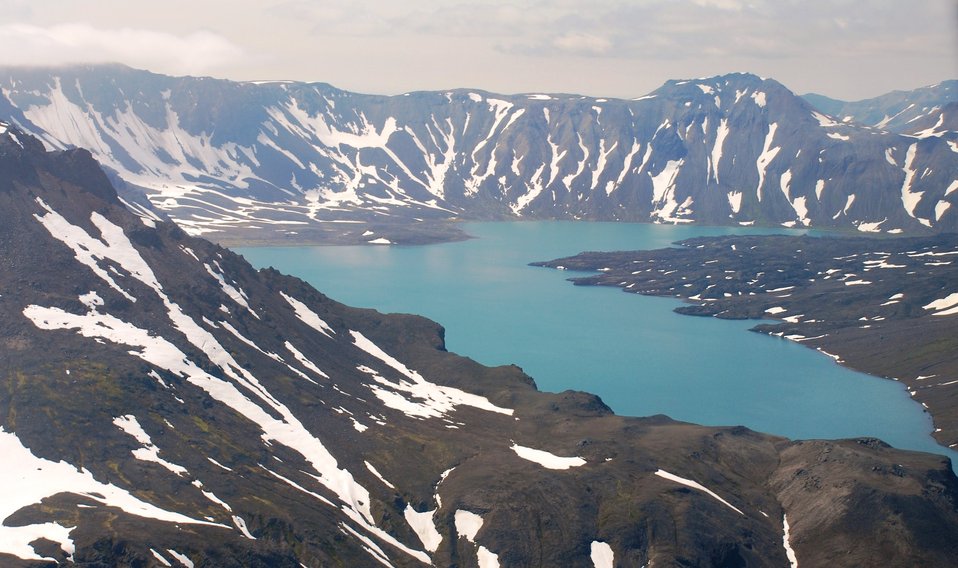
Lake Emmons

Alaska Peninsula National Wildlife Refuge